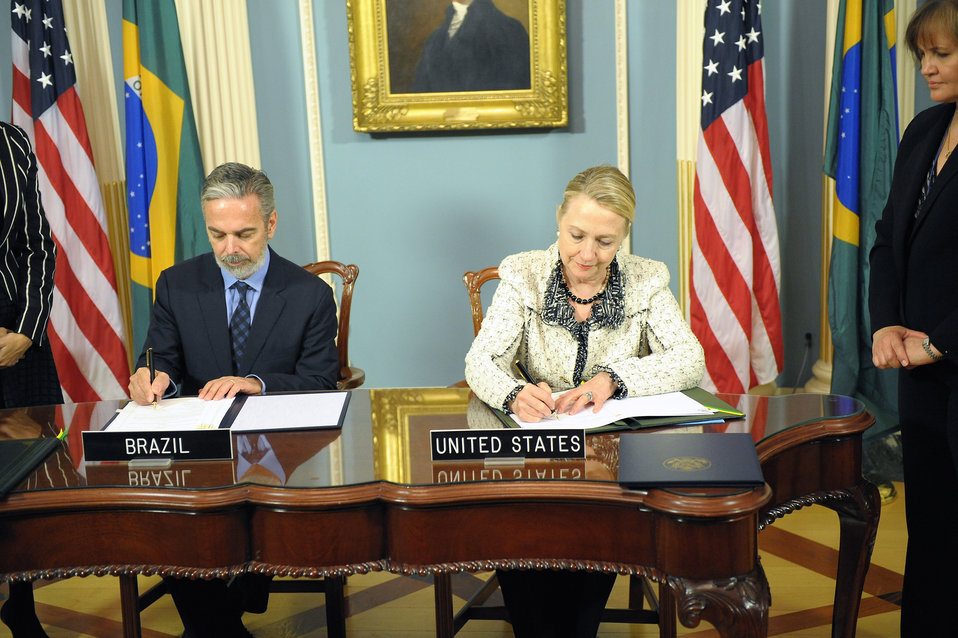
Secretary Clinton and Brazilian Foreign Minister Patriota Sign the U.S.-Brazil Aviation Partnership Memorandum

U.S. Secretary of State Hillary Rodham Clinton and Brazilian Foreign Minister Antonio Patriota sign the U.S.-Brazil Aviation Partnership Memorandum at the U.S. Department of State in Washington, D.C., on April 9, 2012.